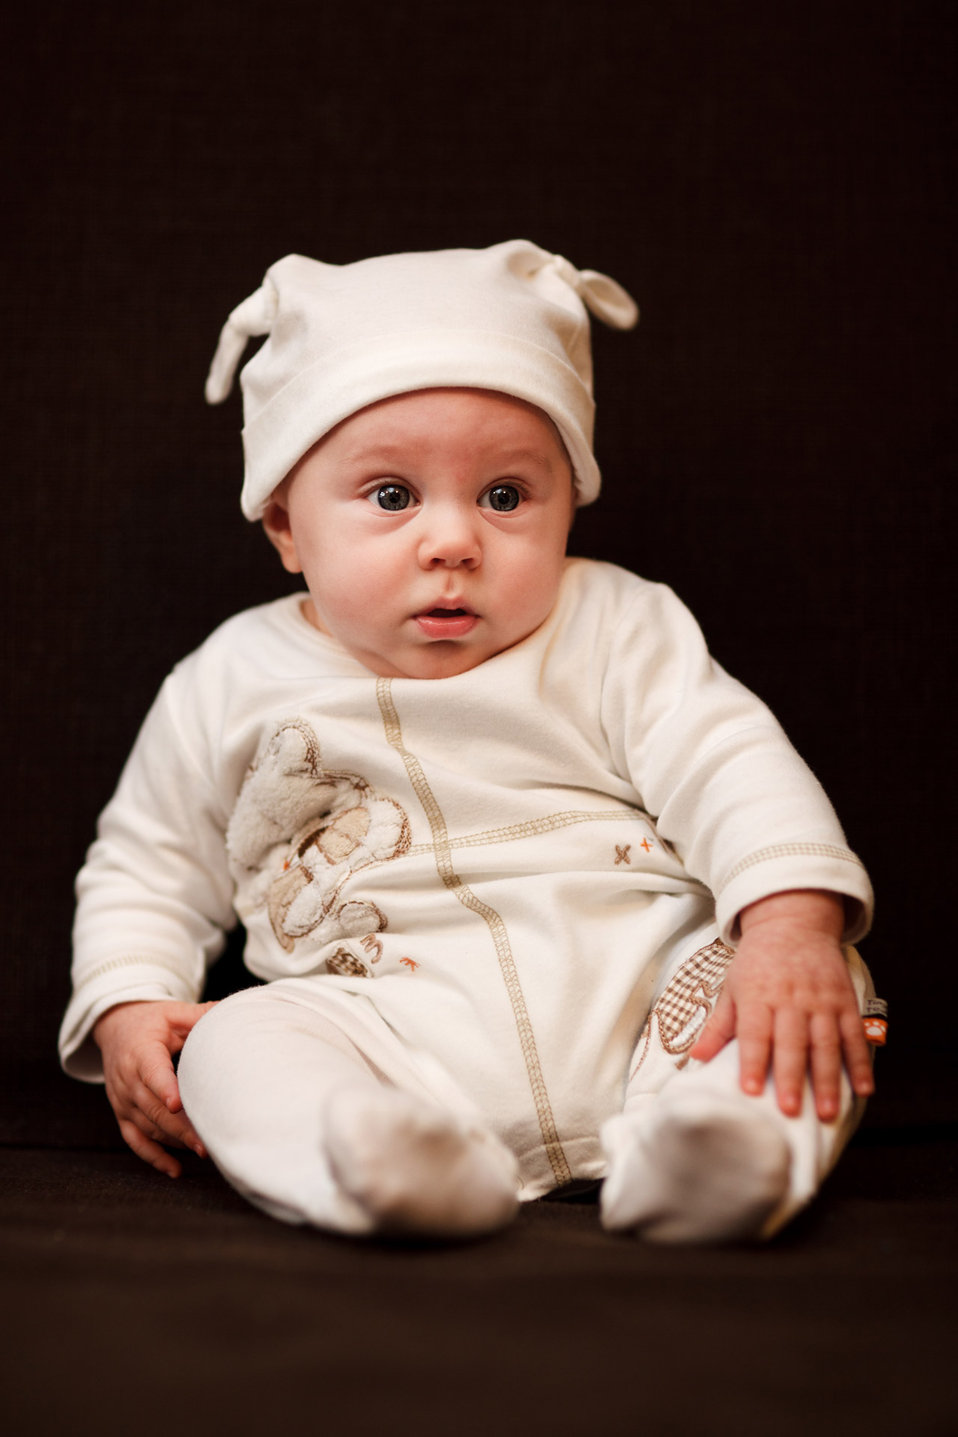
Baby portrait

Young boy sitting on dark background.